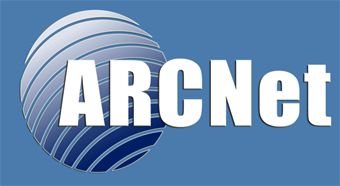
ARCNet

ReserveNet changes to ARCNet, welcomes Air National Guard members